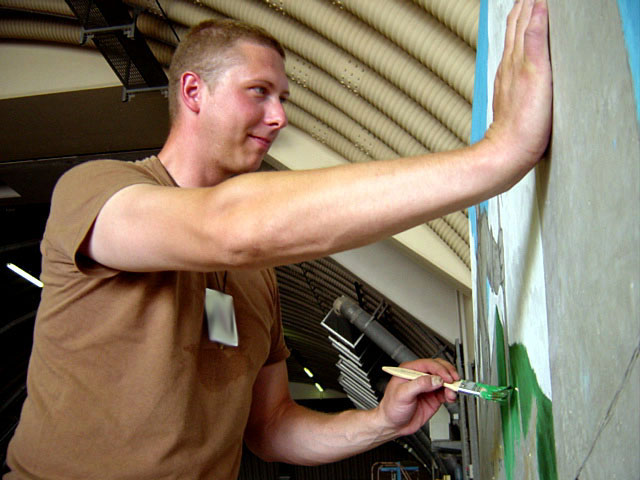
The Green Mountain Boys

SOUTHWEST ASIA (AFPN) -- Tech. Sgt. Travis Perry paints his wing's emblem on a Jersey barrier at a forward-deployed location. Sergeant Perry is a pneudraulics shop chief with the Vermont Air National Guard's 158th Fighter Wing